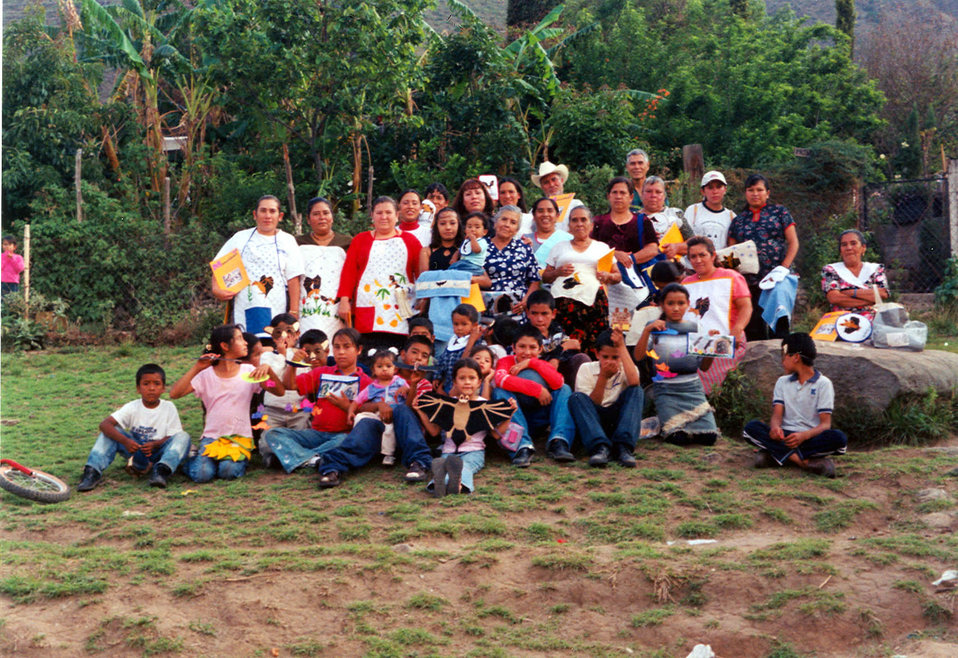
Bat education

Conservation education in local communities helps people appreciate bats.